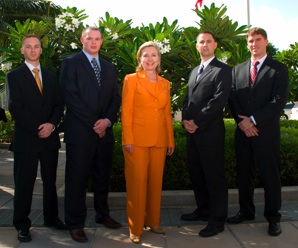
Secretary Clinton With Officers of the Marines

U.S. Secretary of State Hillary Rodham Clinton poses for a photo with (left to right) Staff Sergeant Bouysou, Sergeant Simmons, and Sergeant Jones in Bridgetown, Barbados, on June 10, 2010.